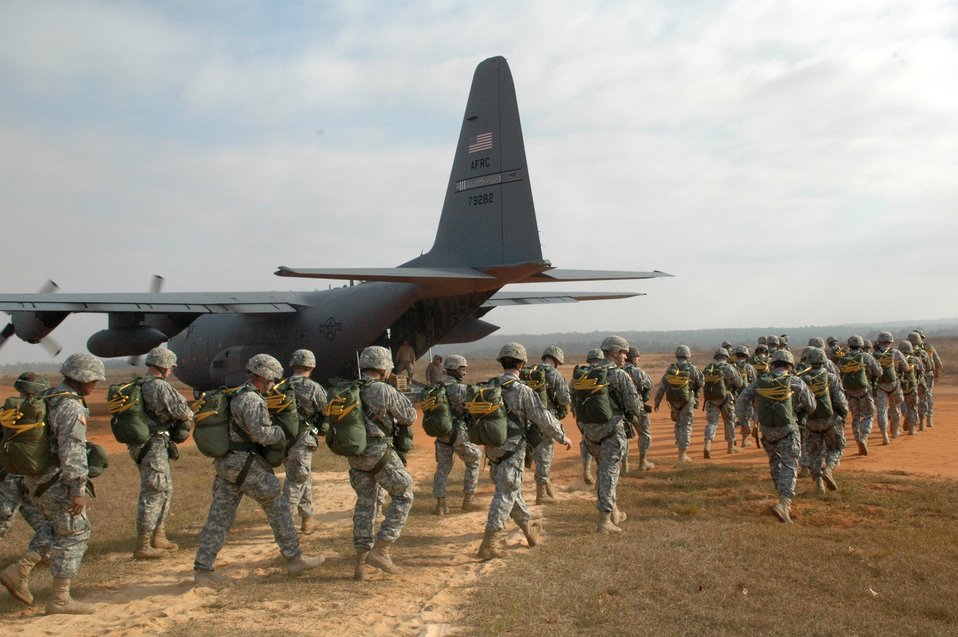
Operation Toy Drop brings international, U.S. military together

Fifty paratroopers walk to a C-130 Hercules with engines running Dec. 8 during Operation Toy Drop held at the Sicily Drop Zone at Fort Bragg, N.C. The Air Force Reserve Command's 440th Airlift Wing supported the combined joint exercise with C-130 airlift. More than 1,050 paratroopers jumped during the exercise.